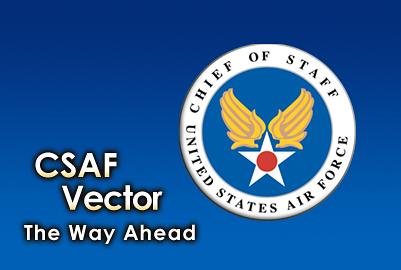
CSAF releases 'Vector'

Air Force Chief of Staff Gen. Norton Schwartz releases his